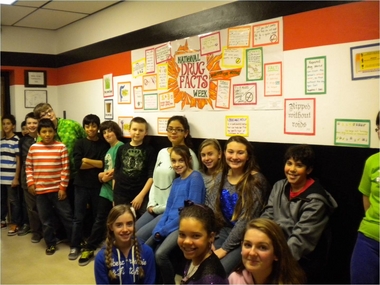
Warren County, NJ schools participate in National Drug Facts Week

New Jersey's Warren County middle and high schools participated in National Drug Facts Week, Jan. 28 through Feb. 3. Students from Hackettstown, Warren Hills, North Warren and Great Meadows created banners that “Shatter the Myths” about drug abuse